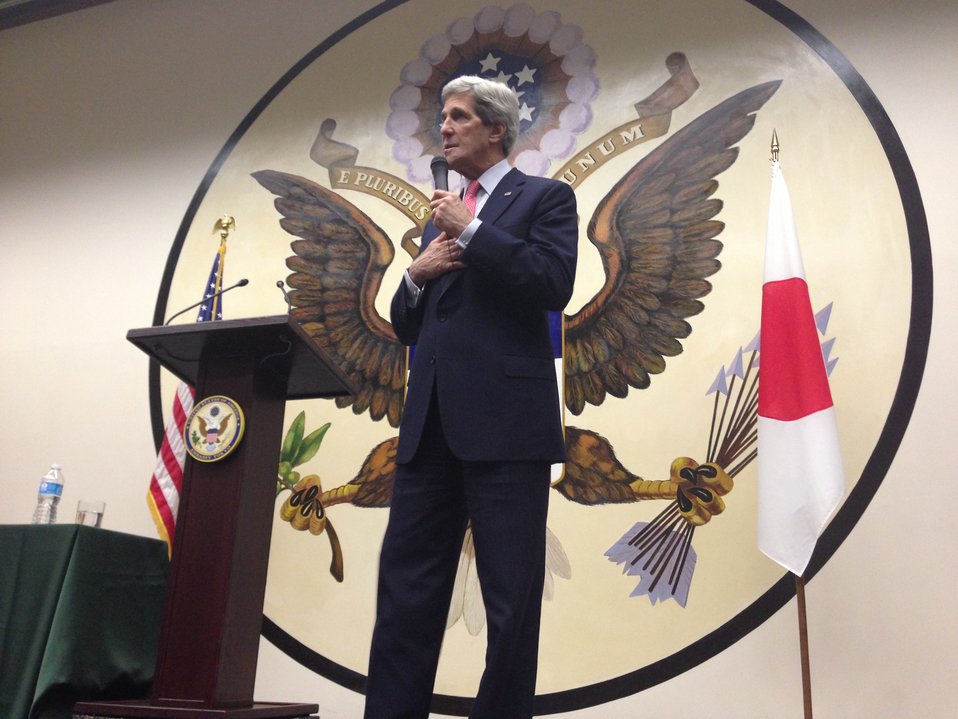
Secretary Kerry Addresses U.S. Embassy Staff in Tokyo

U.S. Secretary of State John Kerry addresses staff at the U.S. Embassy and five consulates in Japan in Tokyo, Japan, on April 15, 2013.